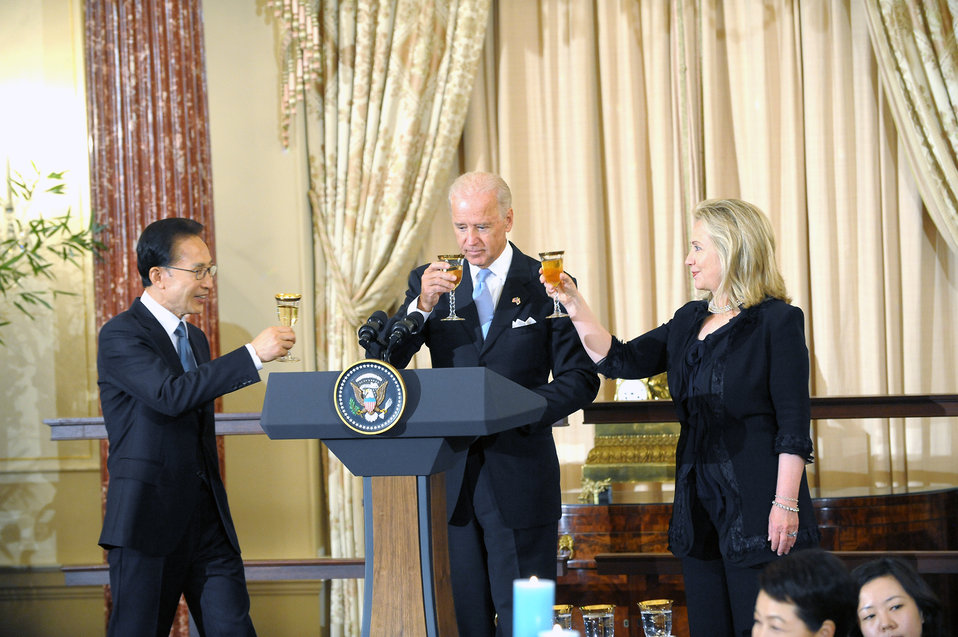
Vice President Biden, Republic of Korea President Lee, and Secretary Clinton Toast the U.S.-Republic of Korea Alliance

U.S. Vice President Joseph Biden, center; Republic of Korea President Lee Myung-bak, left; and U.S. Secretary of State Hillary Rodham Clinton; right, toast the U.S. alliance with the Republic of Korea, at the U.S. Department of State in Washington, D.C., on October 13, 2011.